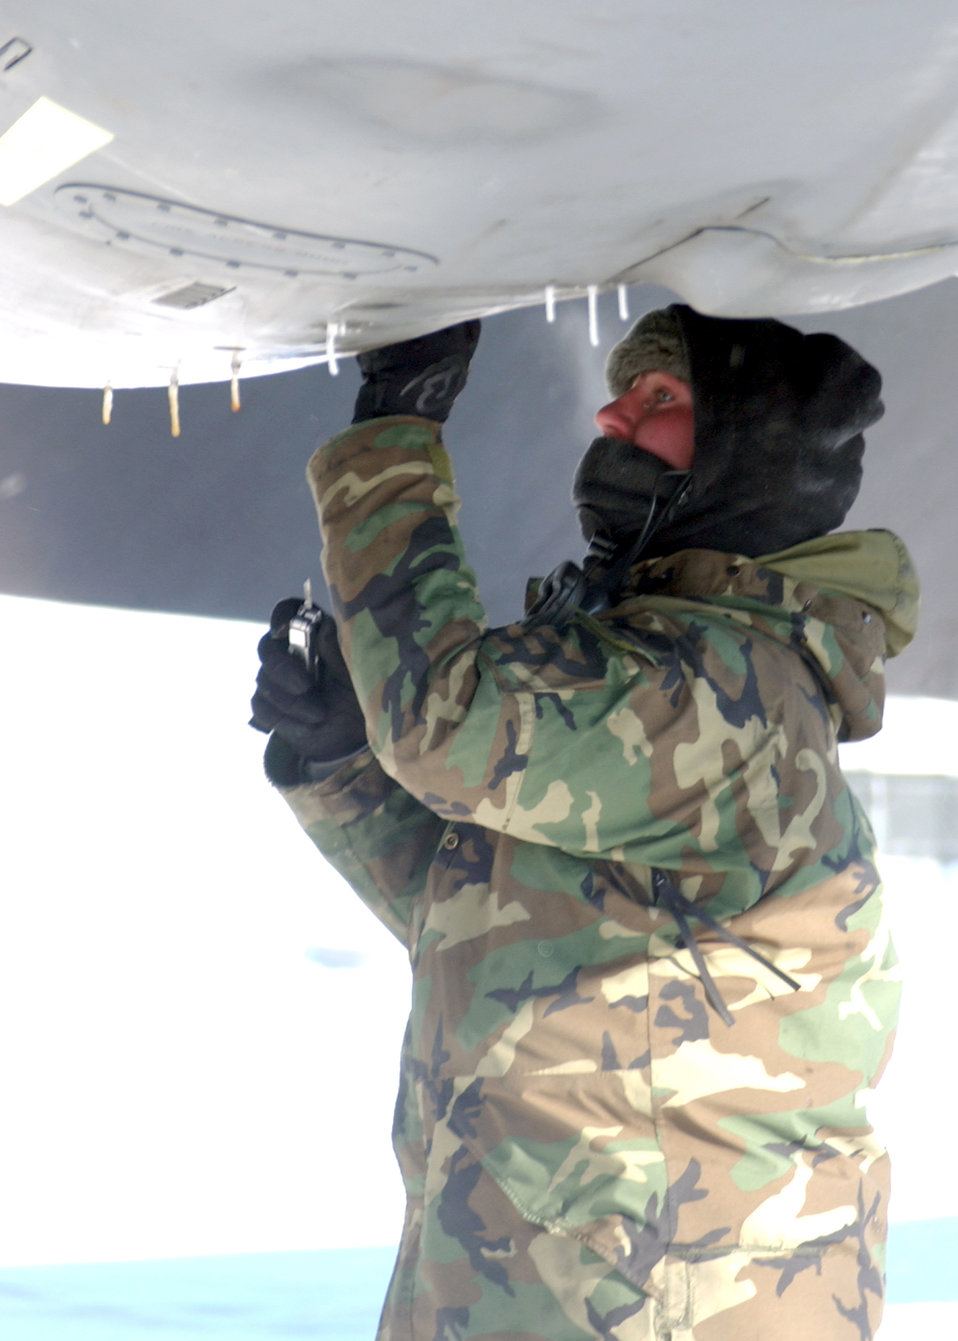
It's a 'brr-r-rrtiful' new year

MINOT AIR FORCE BASE, N.D. -- Senior Airman Zachary Miller closes an ice-encrusted cowling panel on a B-52H Stratofortress. Temperatures here recently averaged minus 20 degrees with wind chill. Miller is assigned to the base's 5th Aircraft Maintenance Squadron.